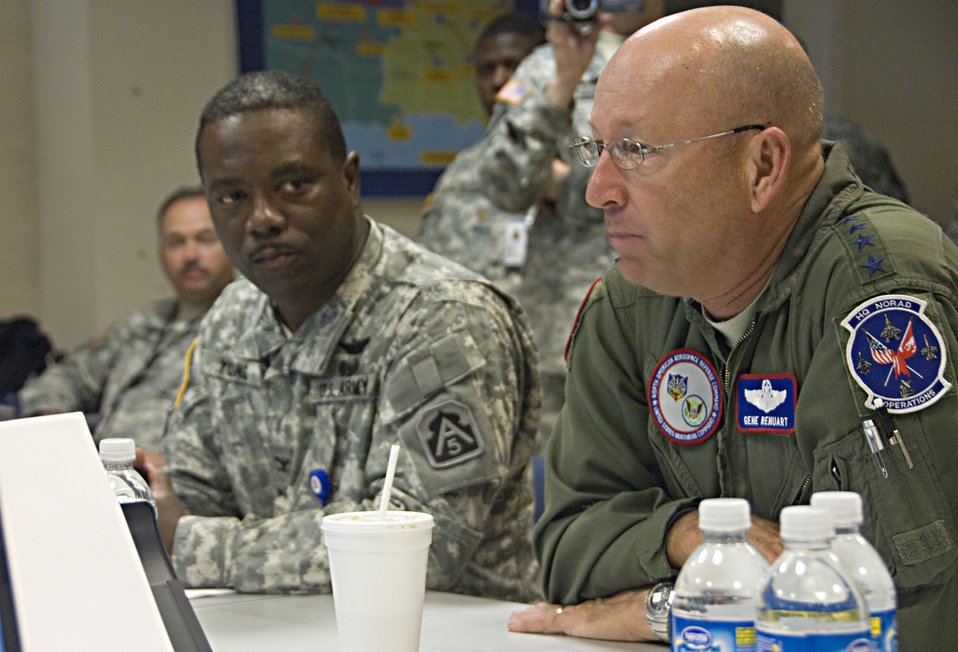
NORTHCOM commander praises Gustav preparations

Gen. Gene Renuart, commander of U.S. Northern Command, receives a status briefing on Hurricane Gustav recovery efforts Sept. 3 at the Joint Field Operations center in Baton Rouge, La. The JFO was established to coordinate federal efforts during Hurricane Gustav operations.